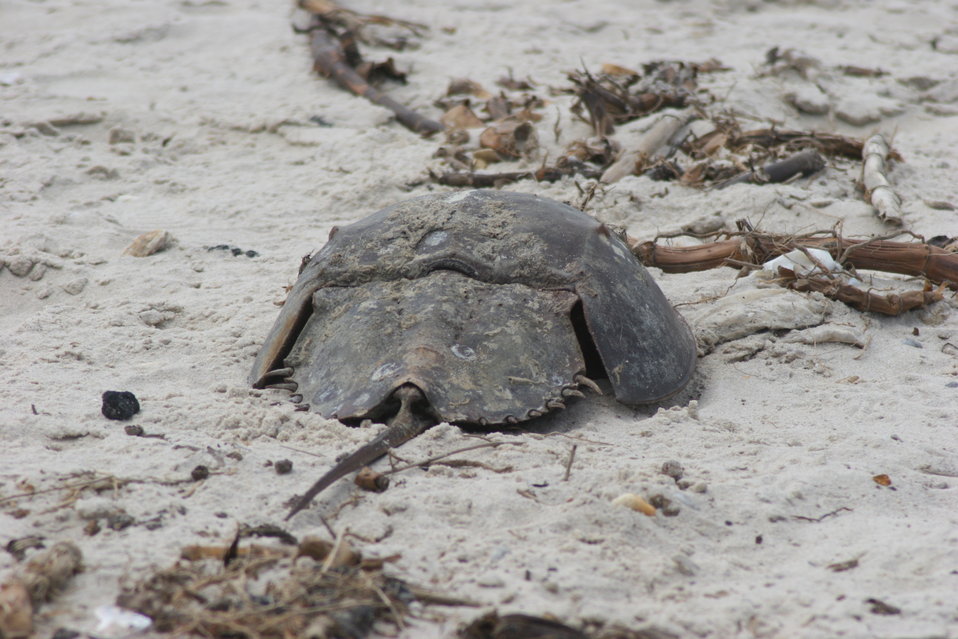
Horseshoe Crab